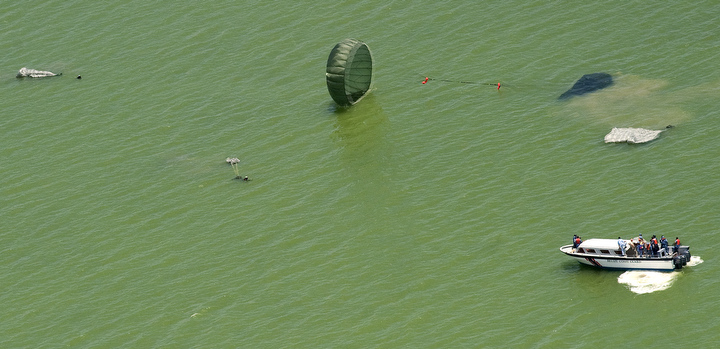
Operation Southern Partner

Parescuemen touchdown in the Caribbean Ocean June 9 while demonstrating a rigged alternate method zodiac, or RAMZ, capability jump for members of the Belize National Coast Guard and local media during Operation Southern Partner.